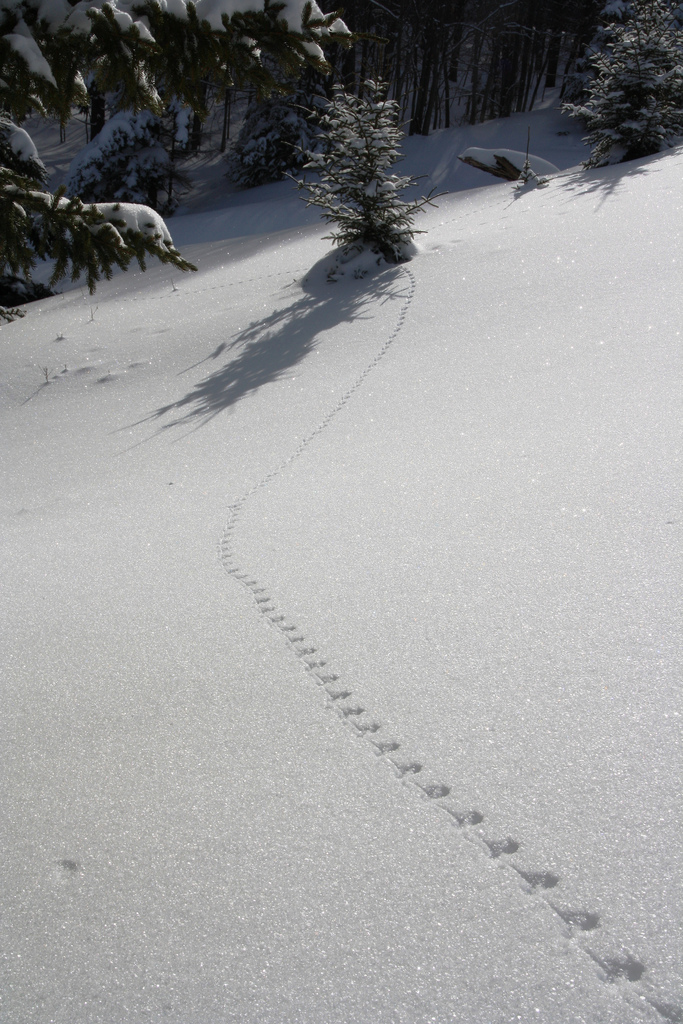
Deer Mouse Tracks in Snow

Tracks in fresh powder.